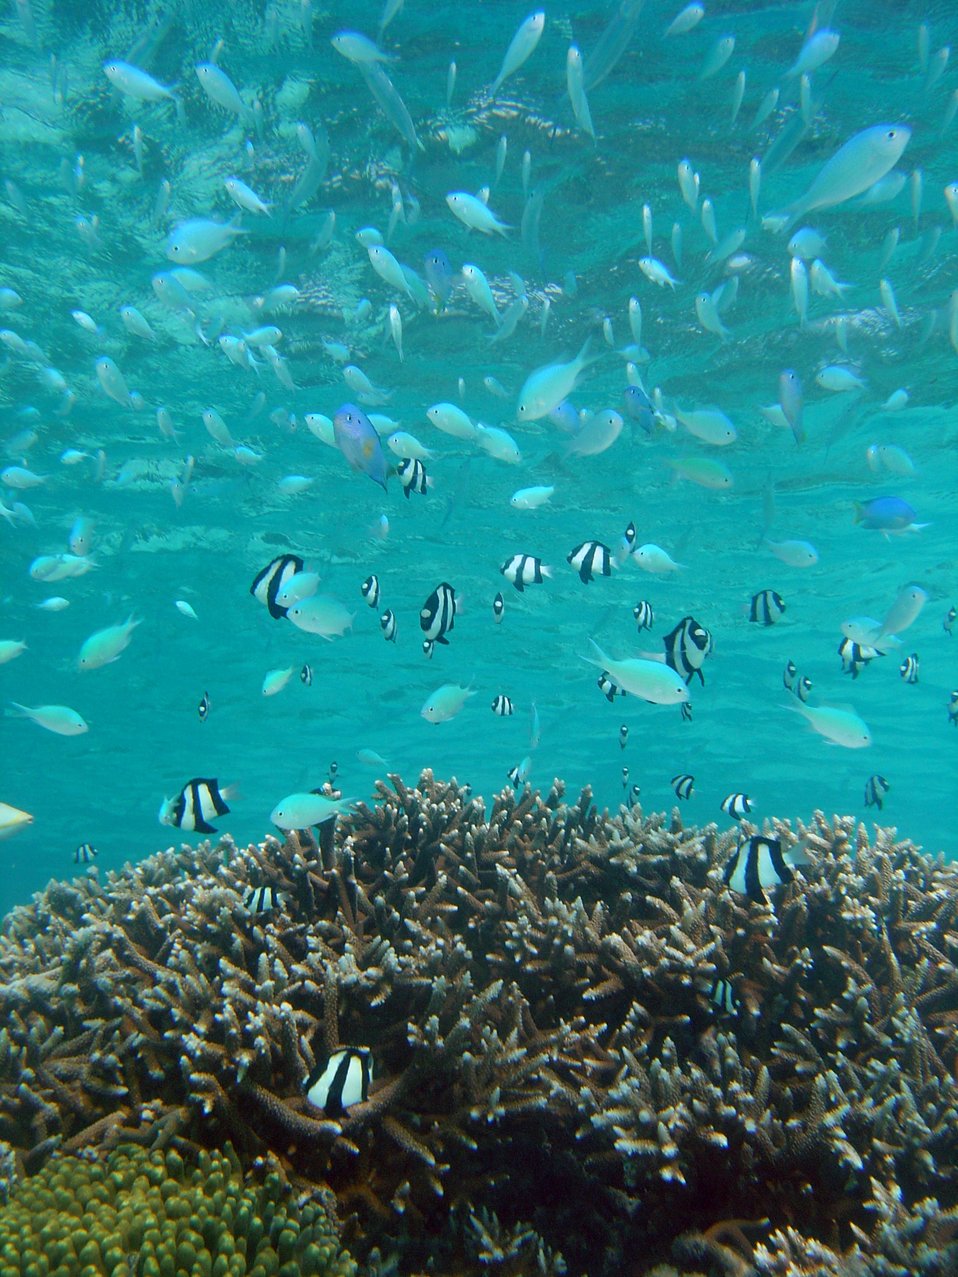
An aggregation of blue-green chromis (Chromis viridis) with a few black and white humbug dascyllus (Dascyllus aruanus).